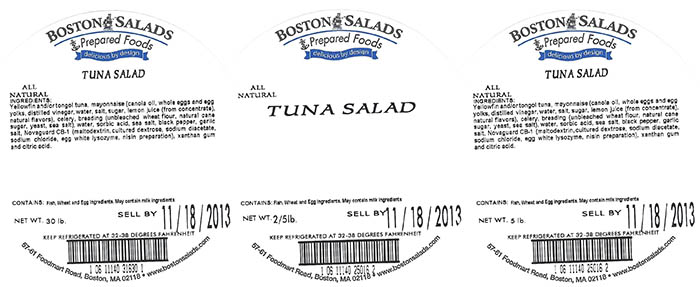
RECALLED – Prepared salads

October 24, 2013 – Product Recall – Boston Salads and Prepared Foods Recalling Ready-To-Eat Products Because of Possible Health Risk.